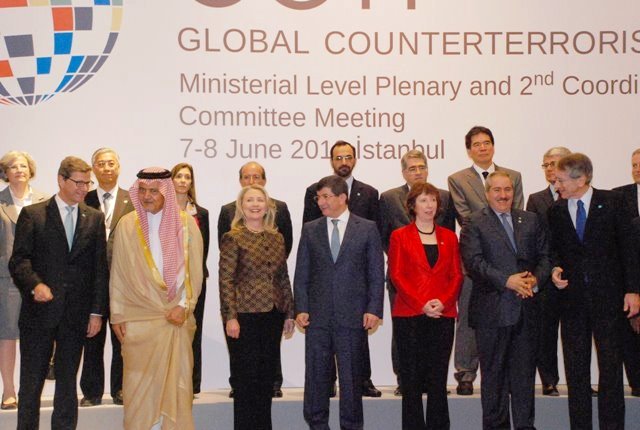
Secretary Clinton Poses for the Family Photo

U.S. Secretary of State Hillary Rodham Clinton poses for a family photo with fellow leaders at the Global Counterterrorism Forum in Istanbul, Turkey, on June 7, 2012.